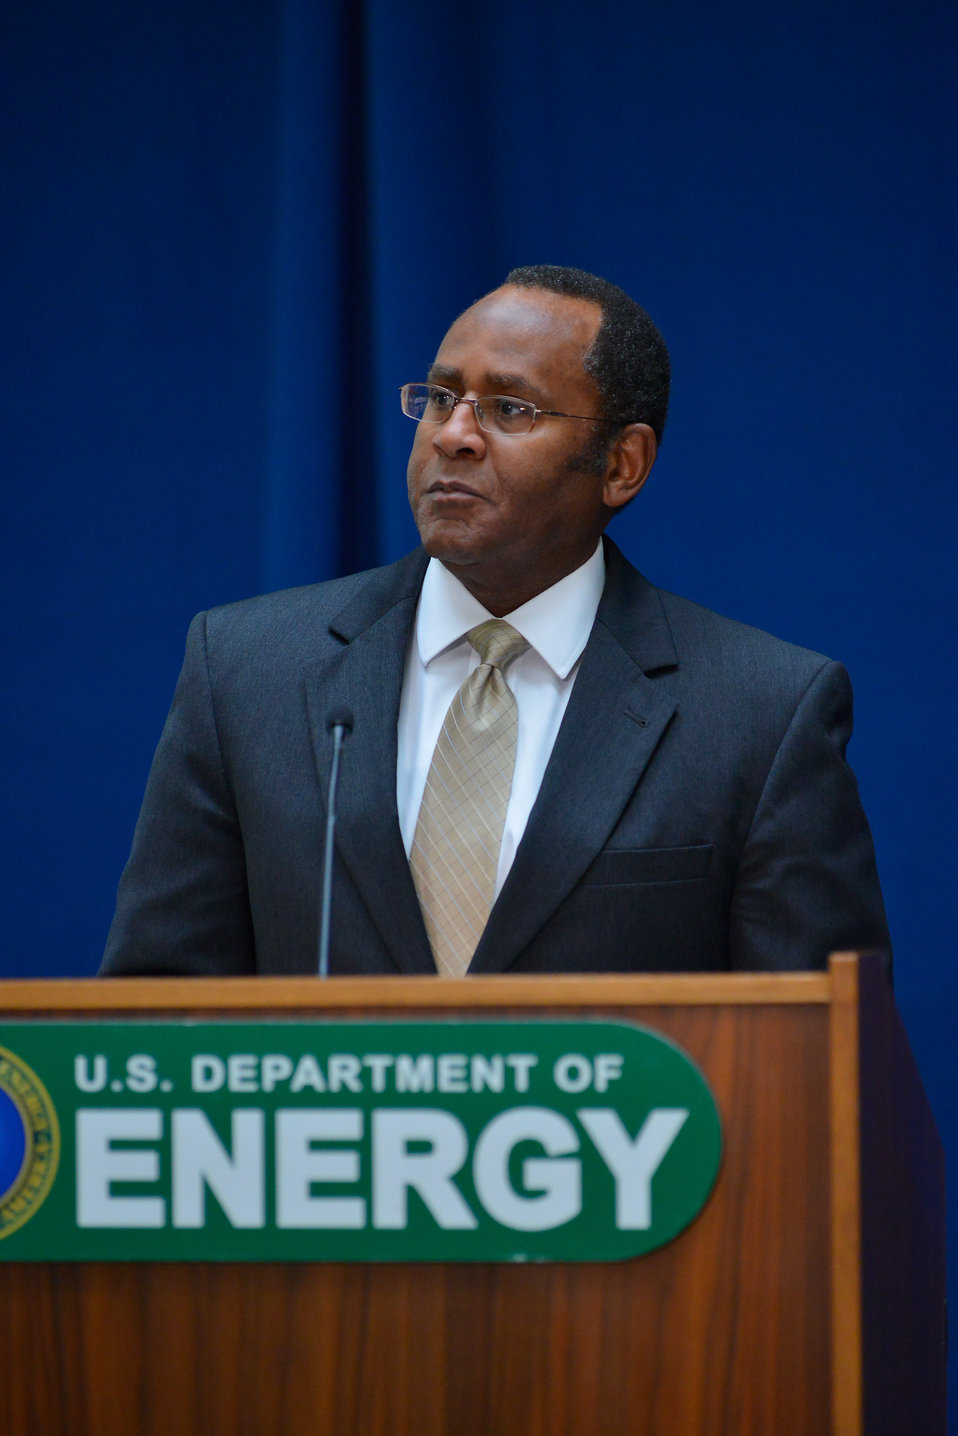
Admiral Williams

The Associate Deputy Secretary, Admiral Melvin Williams Jr., gives opening remarks at the start of the 35th Anniversary and Honors Awards on October 4, 2012.